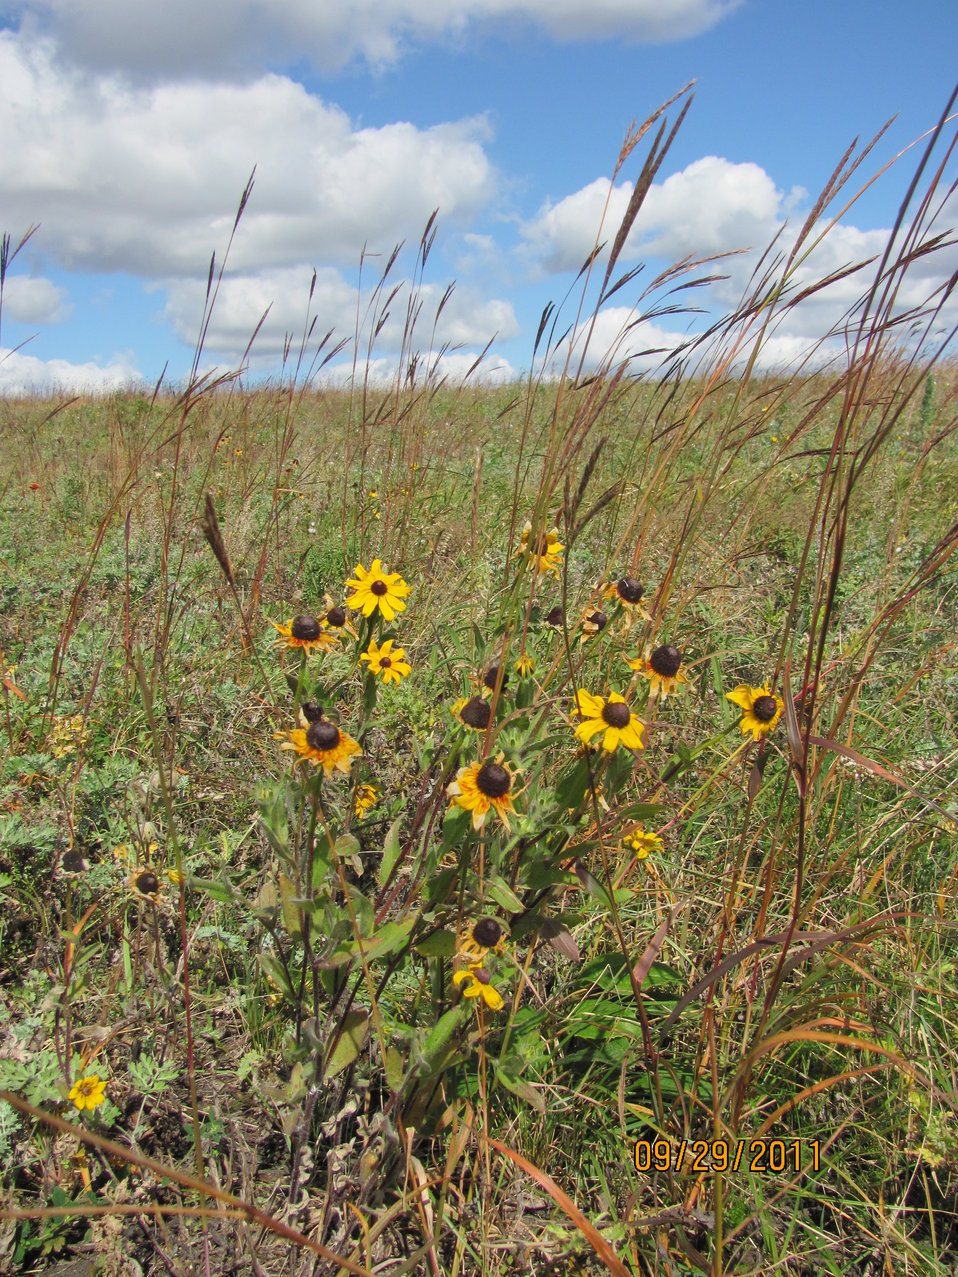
Black-eyed Susan (Rudbeckia hirta) is an Aster (family: Asteraceae) that blooms from July to September. This specimen was found on the Woodworth Station at the Chase Lake National Wildlife Headquarters, growing with a patch of Big Bluestem.